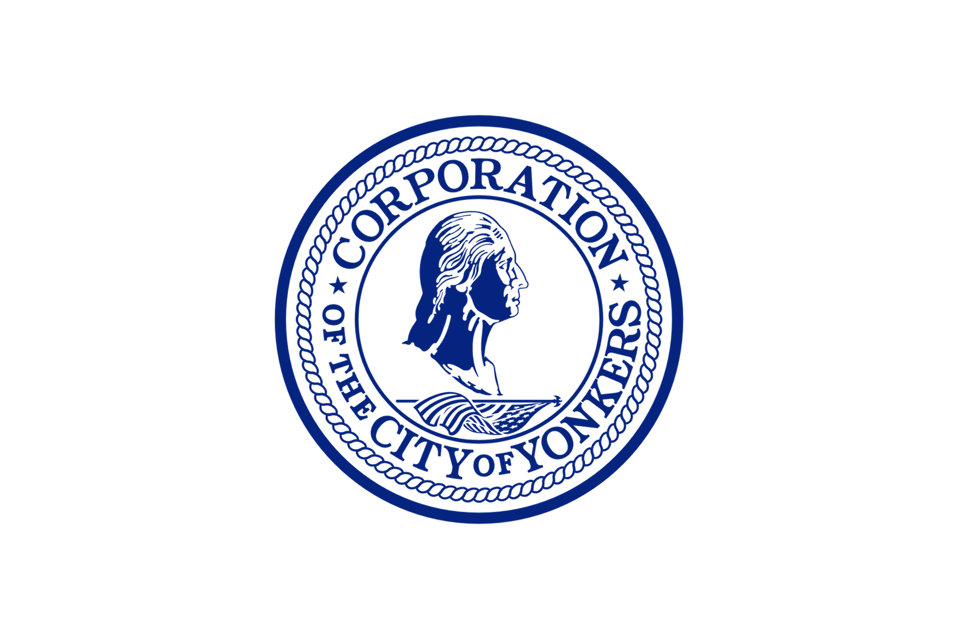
Flag of the City of en:Yonkers, New York. Image created by uploader.
Border template It's easy to put a border around this flag: [[:en:Image:Yonkers flag.svg|100px|border]] 100px|border